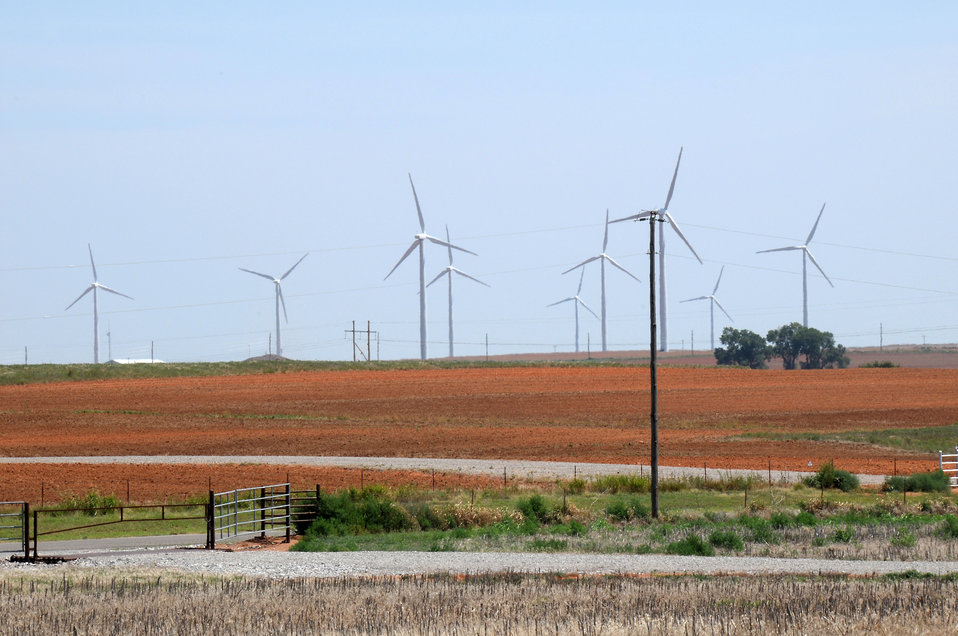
A tractor tills the soil among wind turbines in Oklahoma on August 13, 2009. A wind farm is a group of wind turbines in the same location used to produce electric power. A large wind farm may consist of several hundred individual wind turbines, and cover an extended area of hundreds of square miles, but the land between the turbines may be used for agricultural or other purposes.